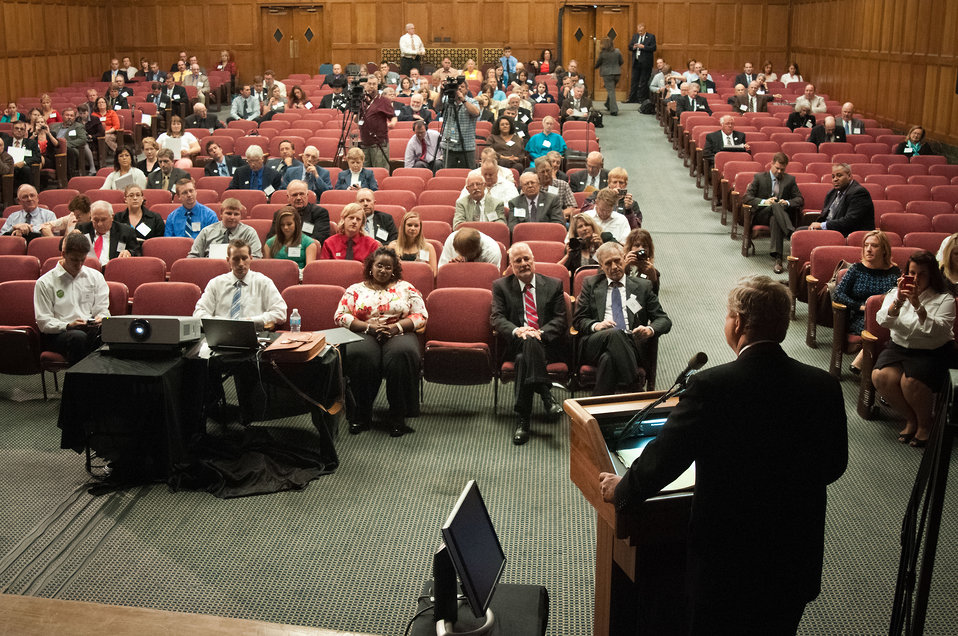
Agriculture Secretary Tom Vilsack addressed the National Farmers Union at the U.S. Department of Agriculture (USDA) in Washington, D.C. on Monday, Sept. 10, 2012. Secretary Vilsack discussed the economics of agriculture, conservation, exports, Rural America and the 2012 Farm Bill.